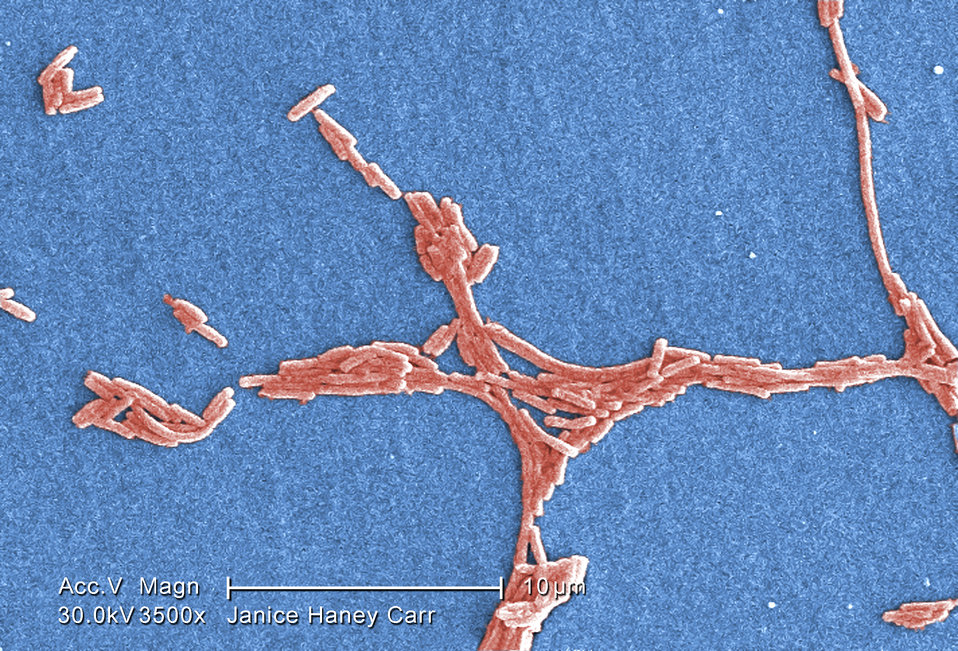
Under a moderate magnification of 3500X, this colorized scanning electron micrograph (SEM) depicted a number of Gram-negative Legionella pneumophila bacteria. Please see PHIL 11092 through 11152 for additional SEMs of these organisms, specifically PHIL 11133 for a black and white version of this image. Of particular importance, is the presence of polar flagella, and pili, or long streamers, which due to their fragile nature, in some of these views seem to be dissociated from any of the bacteria.